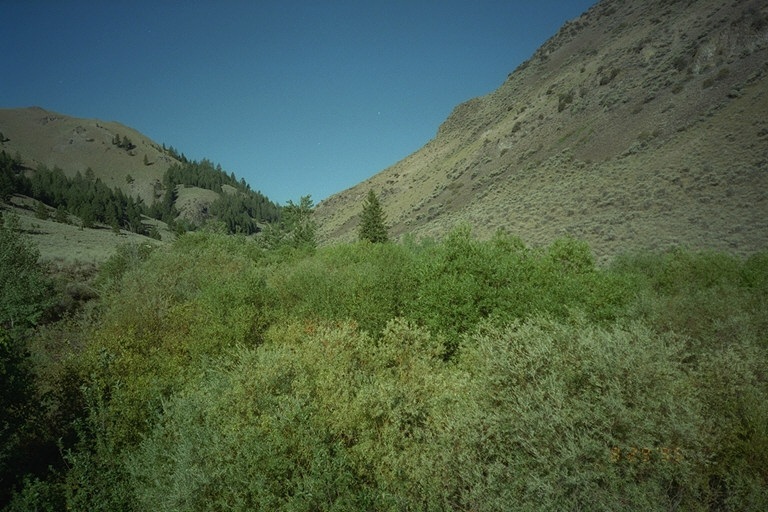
Riparian area Public Lands Salmon Field Office UCSC Upper Columbia Salmon Clearwater District